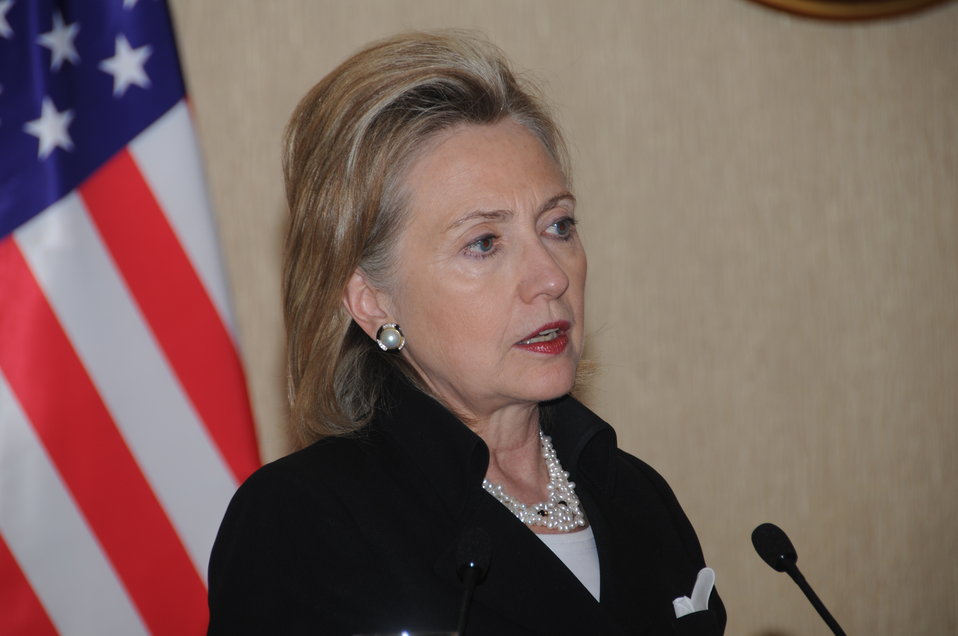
Secretary Clinton Responds to Questions at Press Availability

U.S. Secretary of State Hillary Rodham Clinton responds to questions at a press conference in Baku, Azerbaijan, on July 4, 2010.